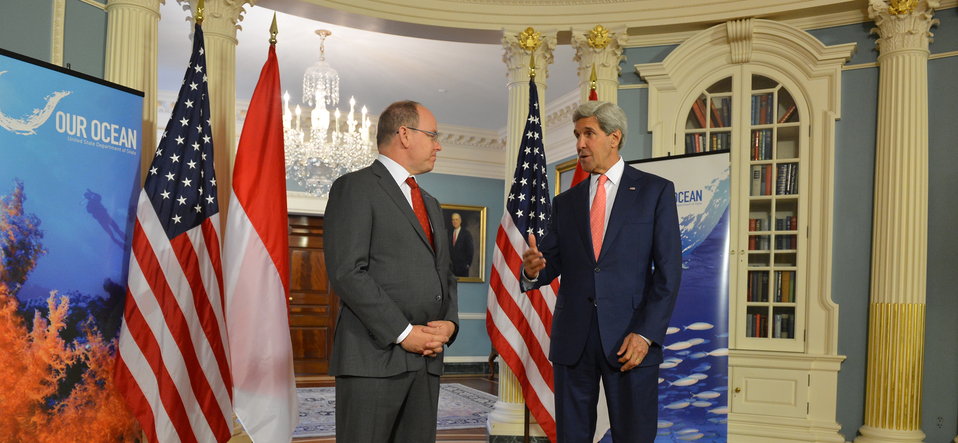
Secretary Kerry Holds Discussion With Prince Albert II of Monaco Prior to Their Meeting

U.S. Secretary of State John Kerry meets with Prince Albert II of Monaco, at the U.S. Department of State in Washington, D.C. on June 16, 2014.